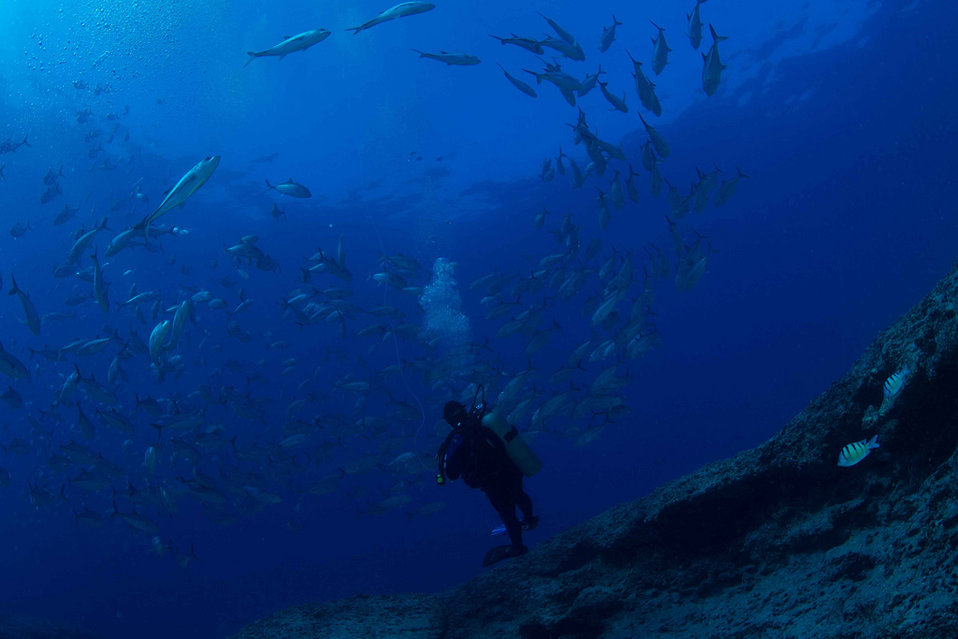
circle of ulua

A swarm of ulua encircles diver Ray Born of the U.S. Fish and Wildlife Service
Midway Atoll National Wildlife Refuge,
Papahānaumokuākea Marine National Monument
January 2012